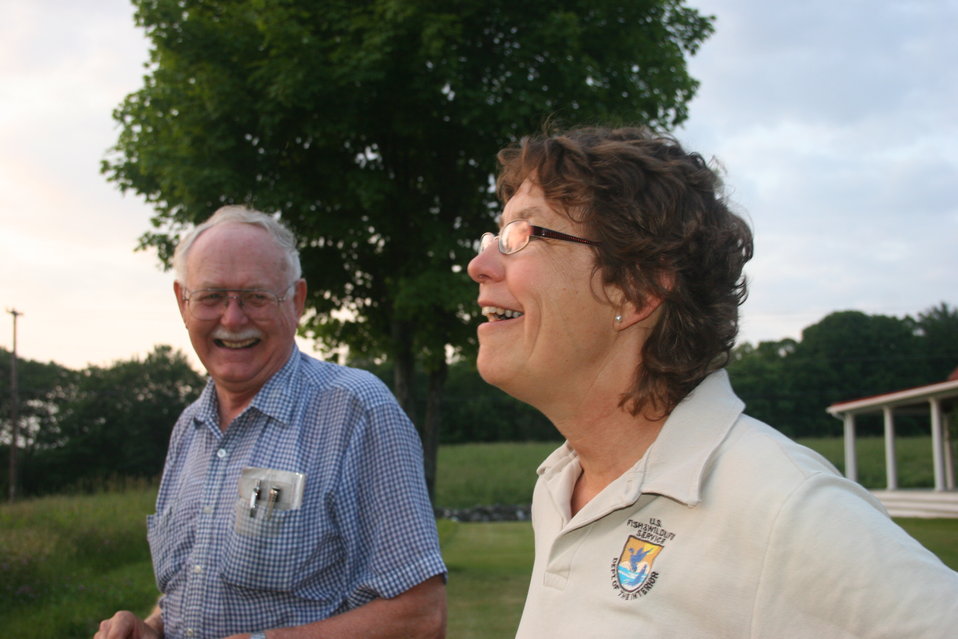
Landowner and USFWS biologist Susi von Oettingen.